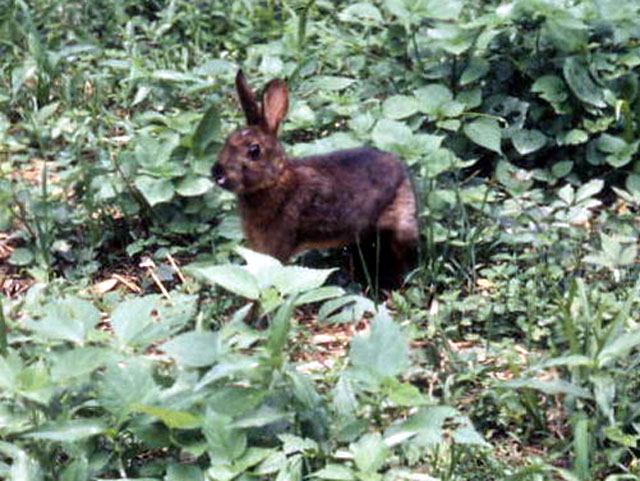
This is an image of a Japanese hare in brown pelage.